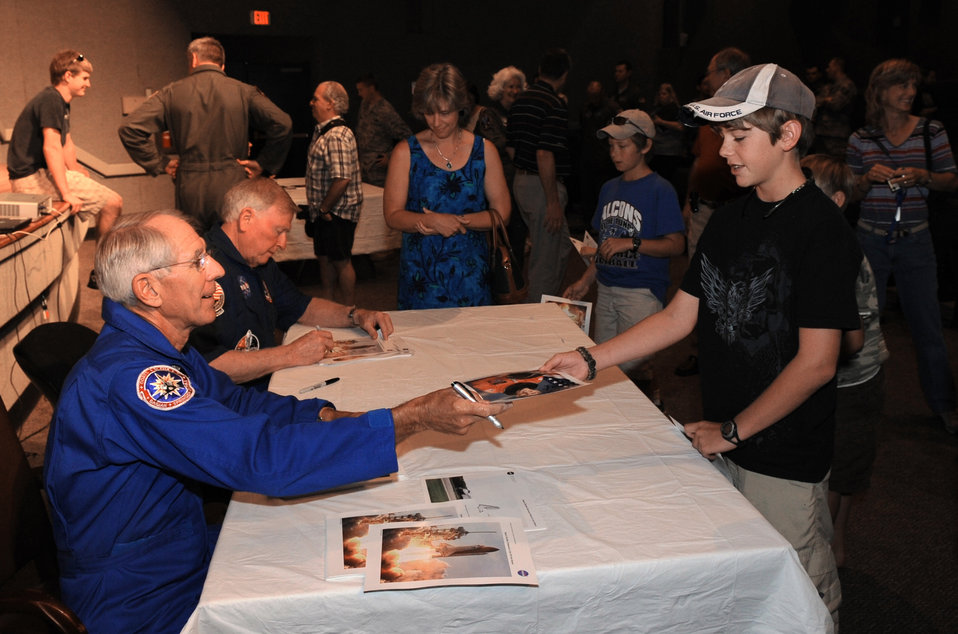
Unit marks 50 years of NASA support

Former astronauts Bob Springer and Jon McBride sign autographs for children following the astronaut panel held by Det. 3 45th Operations Group officials April 24 at Patrick Air Force Base, Fla.